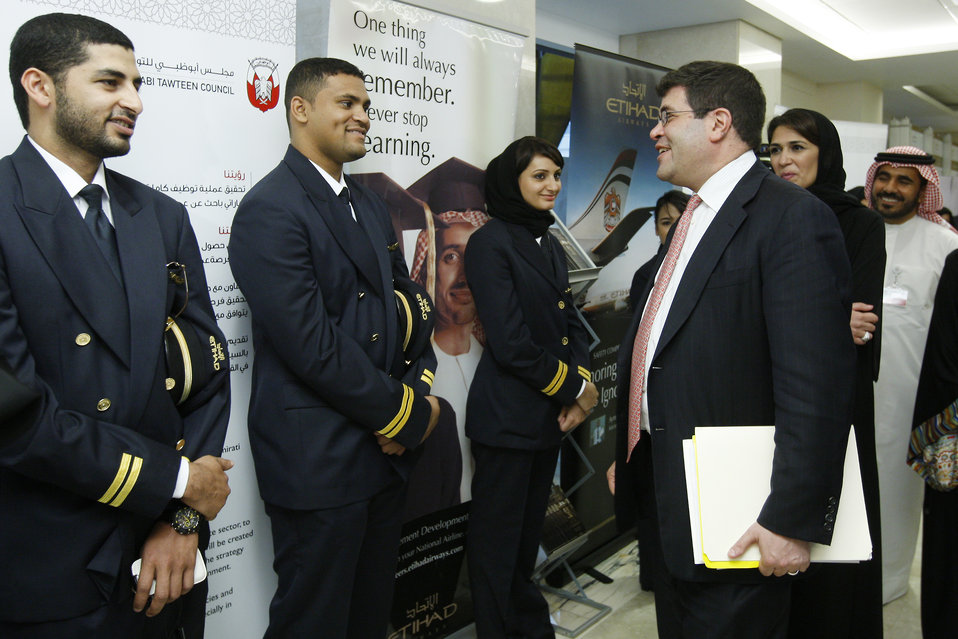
Wolin meets young Emiratis

On Monday, February 15, Deputy Secretary Neal Wolin meets with young Emiratis in Abu Dhabi, UAE.